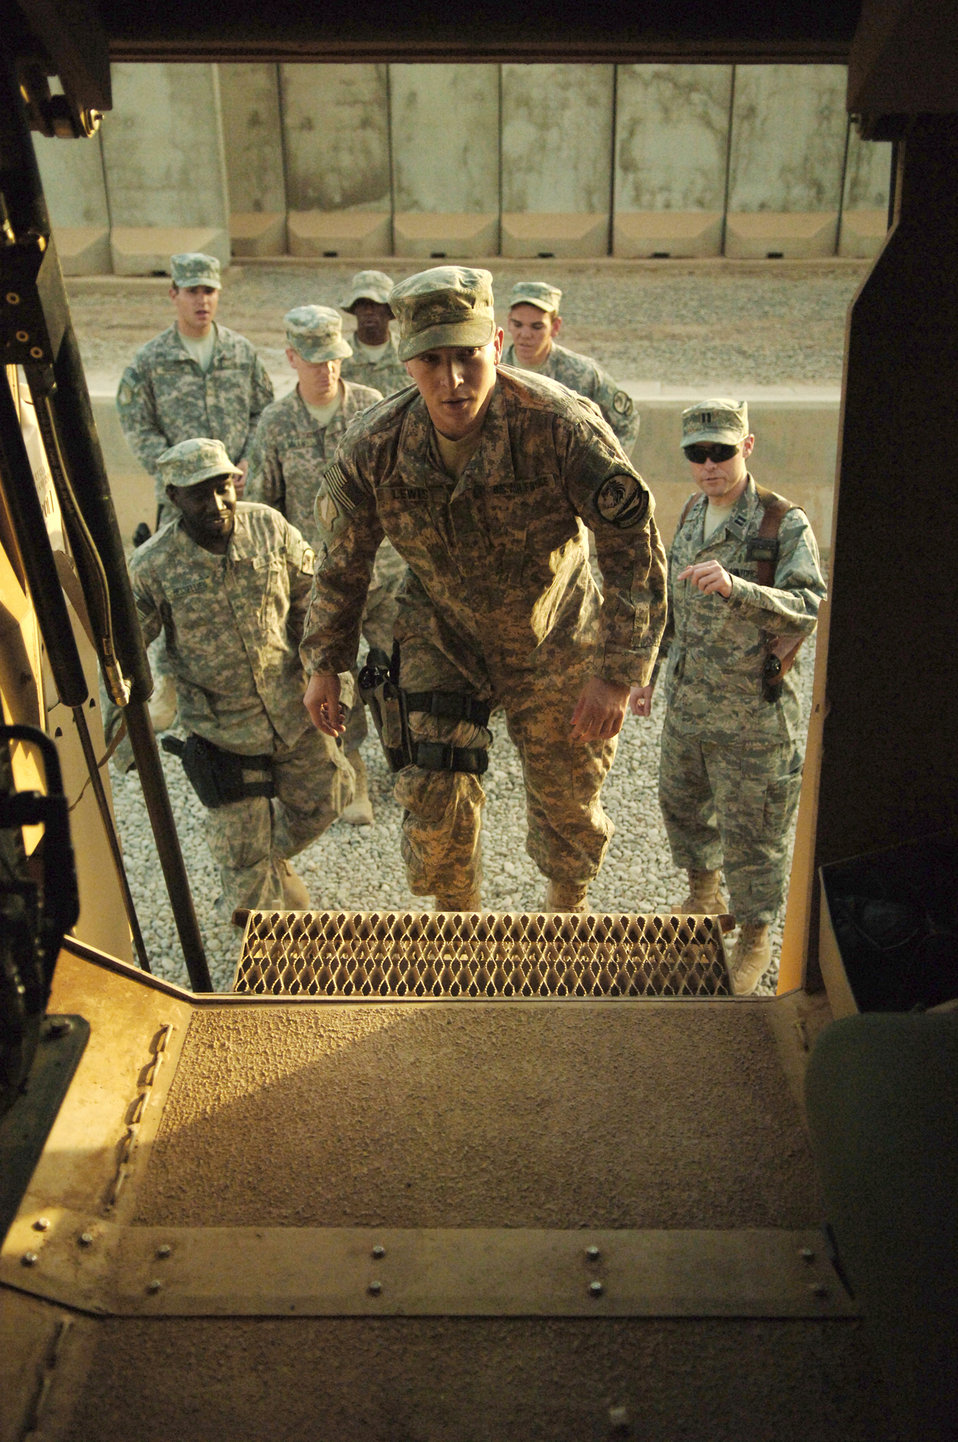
'Defender's Edge': A new approach to combat stress

Capt. Craig Bryan (far right) briefs a group of 532nd Expeditionary Security Forces Squadron's quick reaction force Airmen while they board a mine resistant ambush protected vehicle as part of a combat-stress therapy scenario Aug. 20 at Joint Base Balad, Iraq. Captain Bryan has worked with members of the 532nd ESFS, who conduct operations outside the wire, in an effort to improve their mental resiliency to combat-related stressors. Captain Bryan is the 332nd Expeditionary Aerospace Medicine Squadron traumatic brain injury clinic director.